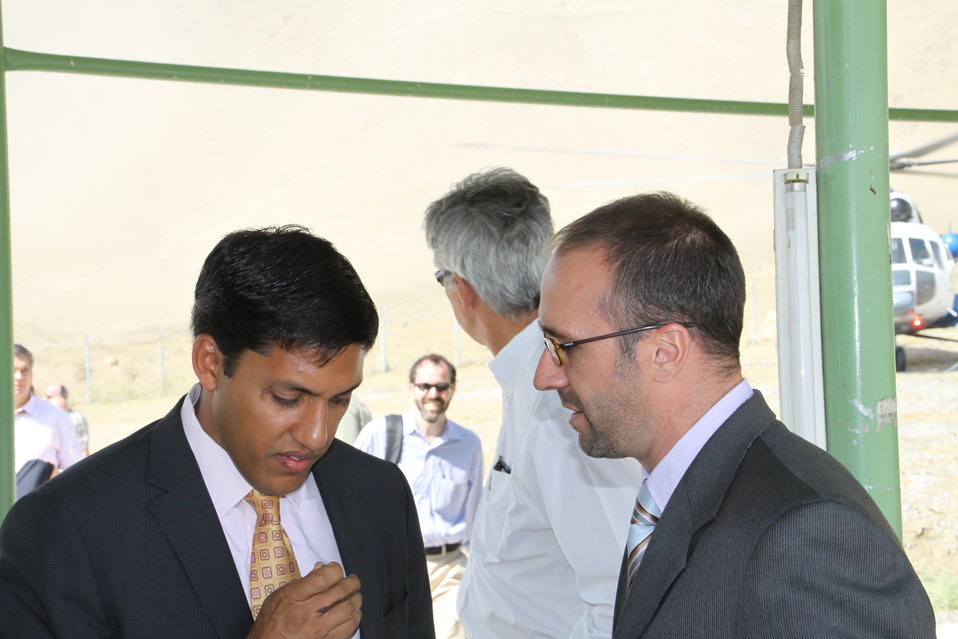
Badam Bagh Farm